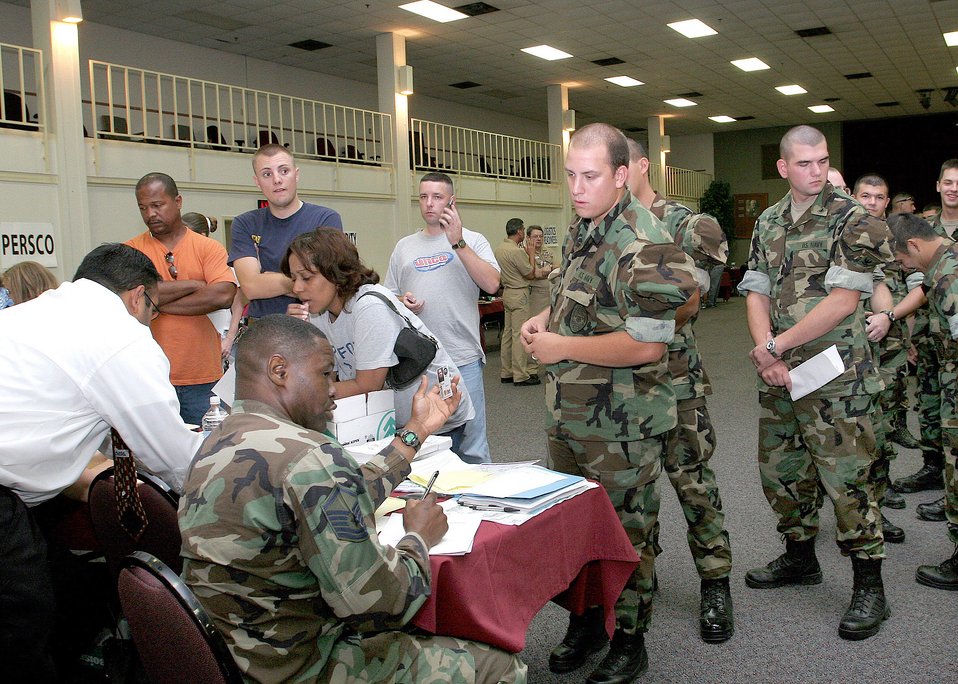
Lackland Airmen take care of Rita evacuees

LACKLAND AIR FORCE BASE, Texas -- Master Sgt. Ezekiel Vaughns examines the identification card of a Hurricane Rita evacuee here. Lackland Airmen are helping military members and their families and pets in wake of Hurricane Rita. The evacuees are from Texas naval air stations located in Ingleside, Kingsville and Corpus Christi. Sergeant Vaughns is assigned to the 37th Civil Engineer Squadron.